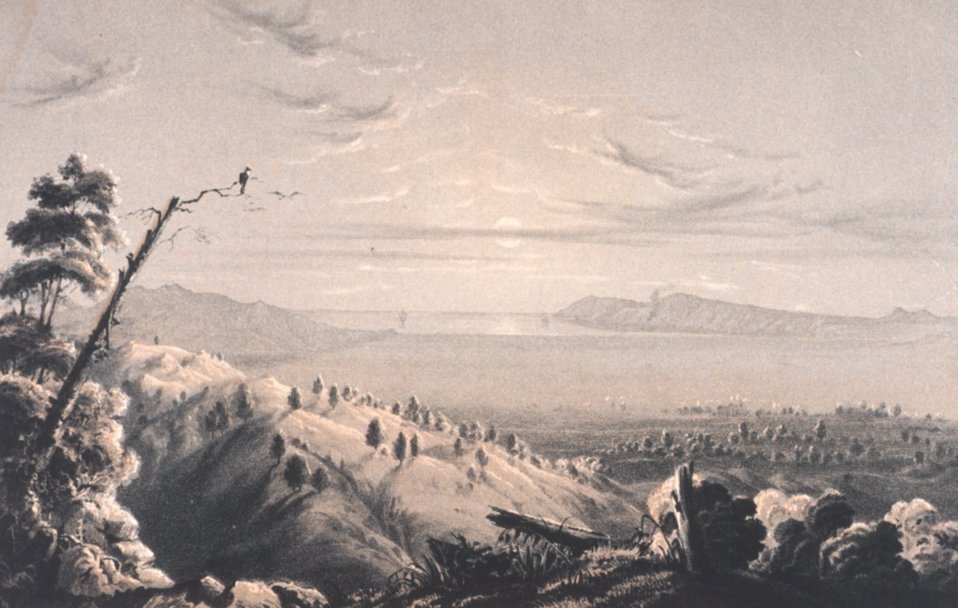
San Luis Bay, to the west of San Luis Obispo. Today called San Luis Obispo Bay.